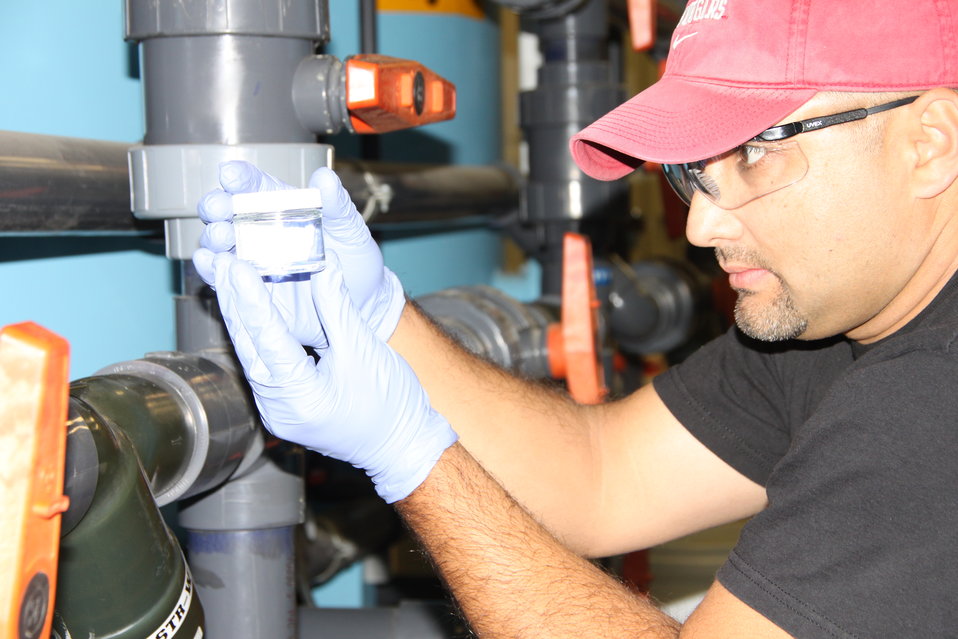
New Resin Improves Efficiency, Reduces Costs in Hanford Site Groundwater Treatment

An operator tests the resin at a 100K Area pump-and-treat system to determine how much hexavelent chromium contamination it has gathered from the groundwater.

The ion exchange resin is loaded into a series of treatment tanks. As water flows through the tanks, the resin strips specific contaminants from the water.